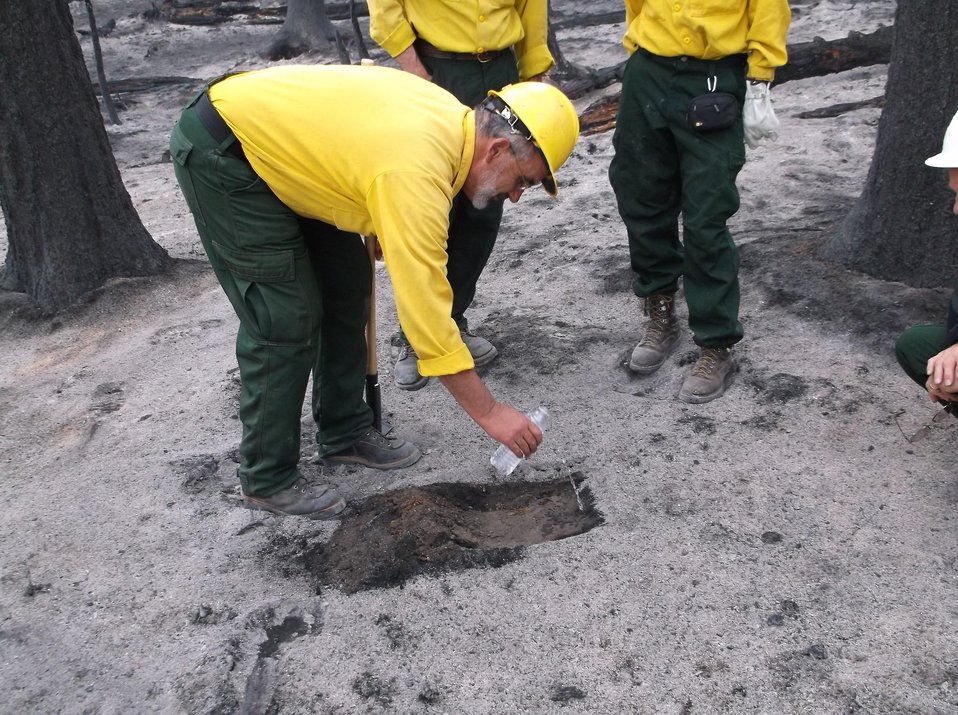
A Burned Area Emergency Response (BAER) team tests the hydrophobicity (water repellency) of the soil in a burned area from the Thompson Ridge Fire in the Sante Fe National Forest in New Mexico. The Thompson Ridge Fire in the Sante Fe National Forest approximately 10 miles north of Jemez, NM began on May 31, 2013 by human ignition consumed over 23, 965 acres. Hydrophobicity reduces the affinity of soils to absorb moisture, which has detrimental and often costly implications for plant growth. Water repellency includes the reduced infiltration capacity of soils, enhanced overland flow and accelerated soil erosion, uneven wetting patterns, development of preferential flow and the accelerated leaching of agrichemicals. BAER is a rapid assessment of burned watersheds by a BAER team to identify imminent post-wildfire threats to human life and safety property and critical natural or cultural resources on National Forest System lands and take immediate actions to implement emergency stabilization measures before the first major storms. Fires result in loss of vegetation exposure of soil to erosion and increased water runoff that may lead to flooding increased sediment debris flows and damage to critical natural and cultural resources. BAER team members implement seeding and mulching installation to prevent erosion, erect temporary water run-off control structures that will protect recovering areas, and installation of warning signs, replace safety related facilities, remove safety hazards, prevent permanent loss of habitat for threatened and endangered species, and prevent the spread of noxious weeds and protect critical cultural resources.